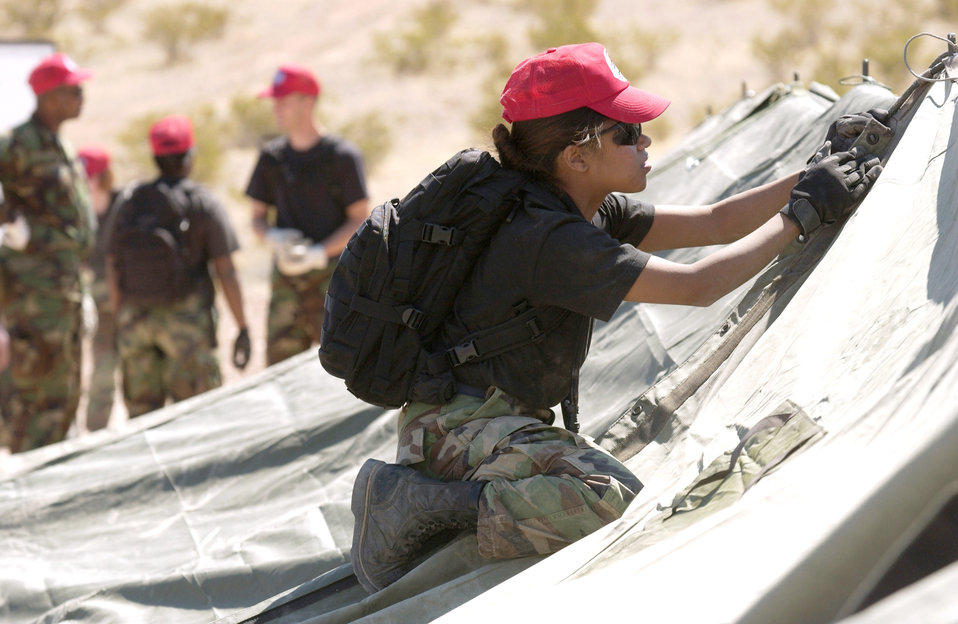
Red Horse in action

Tech. Sgt. Maryann Sawyer makes final adjustments to a tent during a bare-base build-up exercise at Nellis Air Force Base, Nev., April 8 to 9, 2006. The operation included beddown and construction operations for 120 Airmen. The camp had a mobile field kitchen with generators, reverse-osmosis water purification units and field latrine equipment. Sergeant Sawyer is with the 555th Red Horse Civil Engineer Squadron.